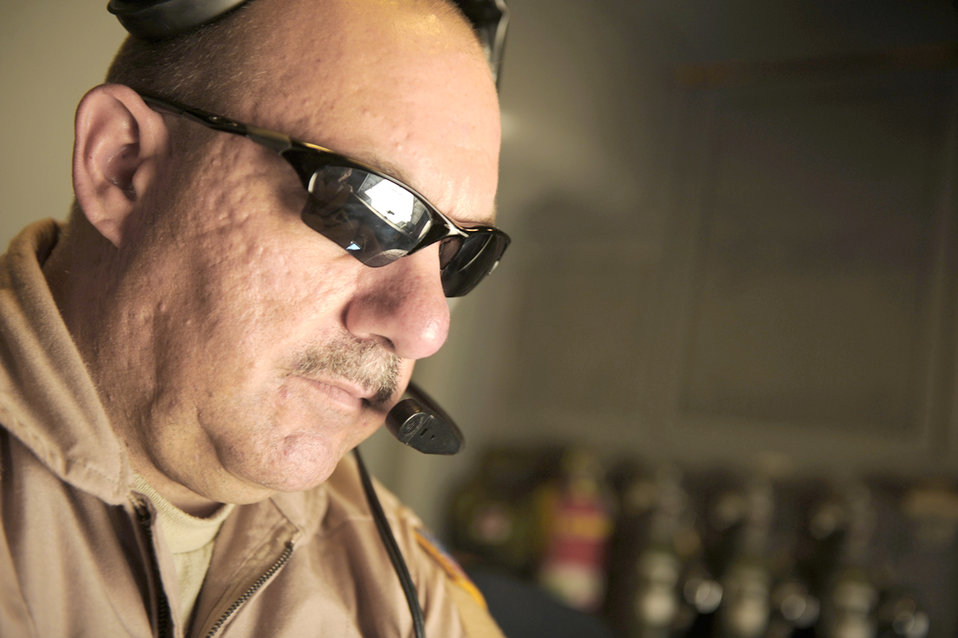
Jordan

U.S. Air Force Master Sgt. Lynn Thatcher maneuvers the refueling boom of a KC-10 Extender to make a connection with an F-16 Fighting Falcon Oct. 20, 2010, near Azraq Air Base, Jordan as part of The Falcon Air Meet 2010. The KC-10 refueled both U.S. Air Force and Royal Jordanian Air Force F-16s. Sergeant Thatcher is with the 2nd Air Refueling Squadron at Joint Base McGuire, N.J.